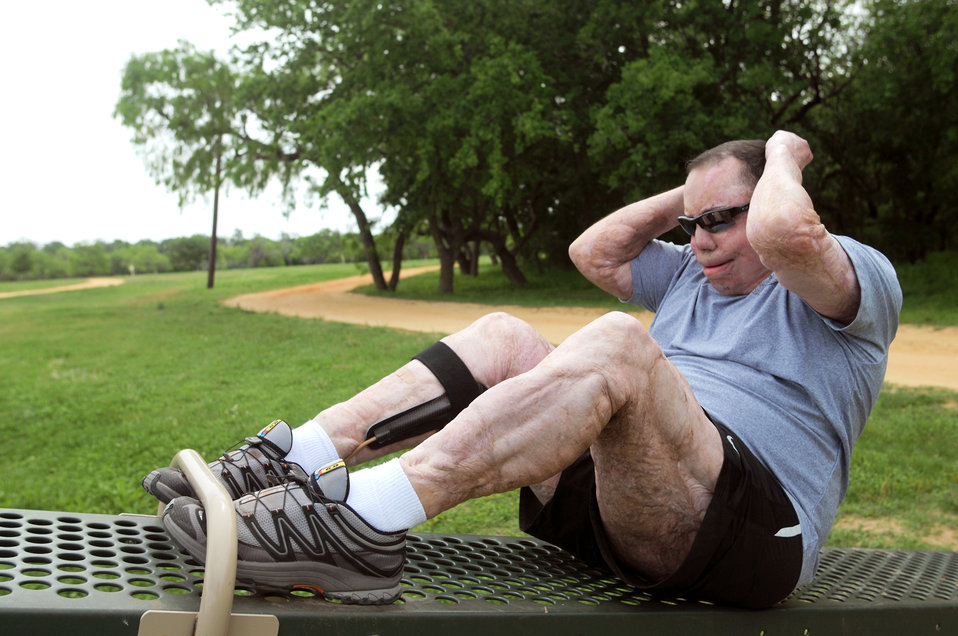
Wounded warrior to compete in Warrior Games

Tech. Sgt. Israel Del Toro is one of the 200 athletes scheduled to compete in the Warrior Games May 10 through 14 in Colorado Springs, Colo. Sergeant Del Toro is a tactical air control party instructor and recruiter at the 342nd Training Squadron at Lackland Air Force Base, Texas.